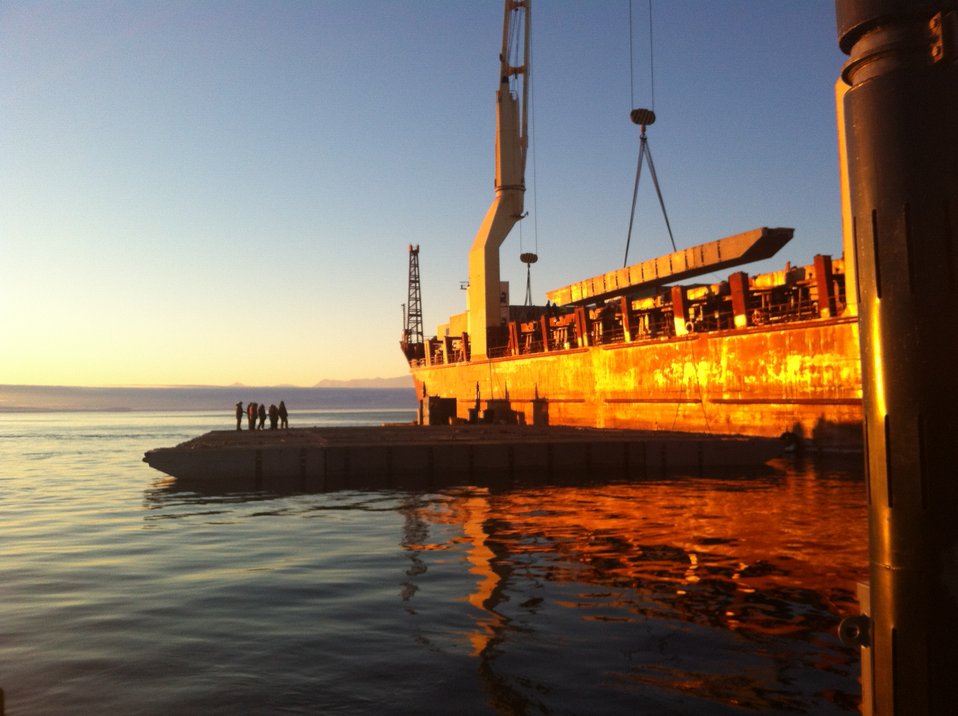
Mission to McMurdo

The crane aboard the USNS Green Wave hoists pieces of a modular causeway system at McMurdo Station, Antarctica, February 2012. The Army’s 331st Transportation Company built a pier to unload supplies for the National Science Foundation base.